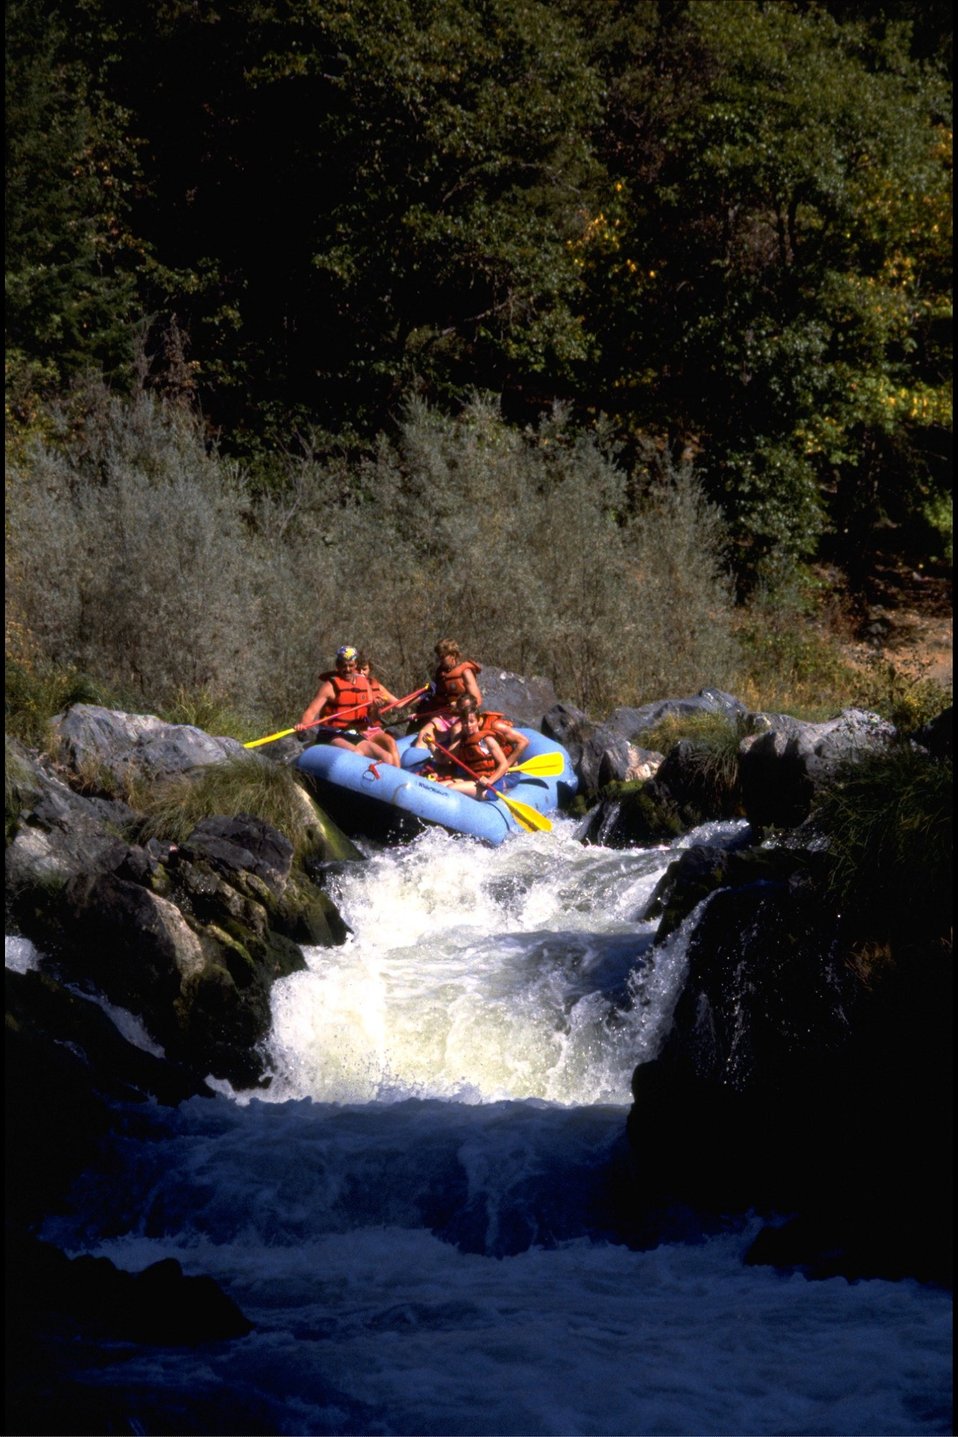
Rogue River - Rainie Falls, wild section. Paddle raft in middle chute, 950 cfs.